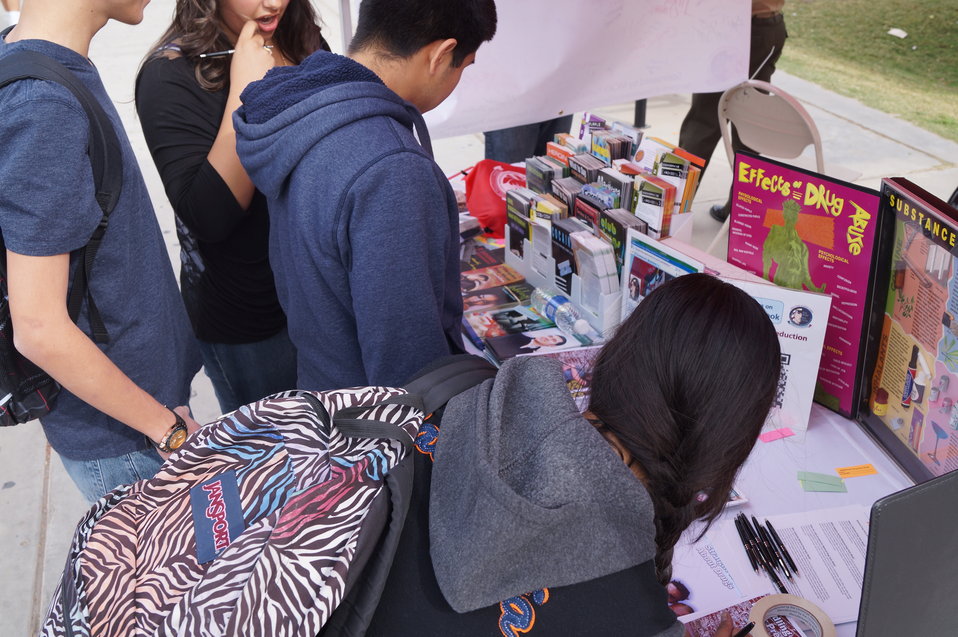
Nationa Drug Facts Week - CIBOLA HS

The Drug Demand Reduction Program out of Yuma, Arizona held numerous events at local schools to support NIDA's National Drug Facts Week, Jan. 27-Feb. 2 2014. Teens participated in drug awareness games, and helped to Shatter the Myths about teen substance abuse.